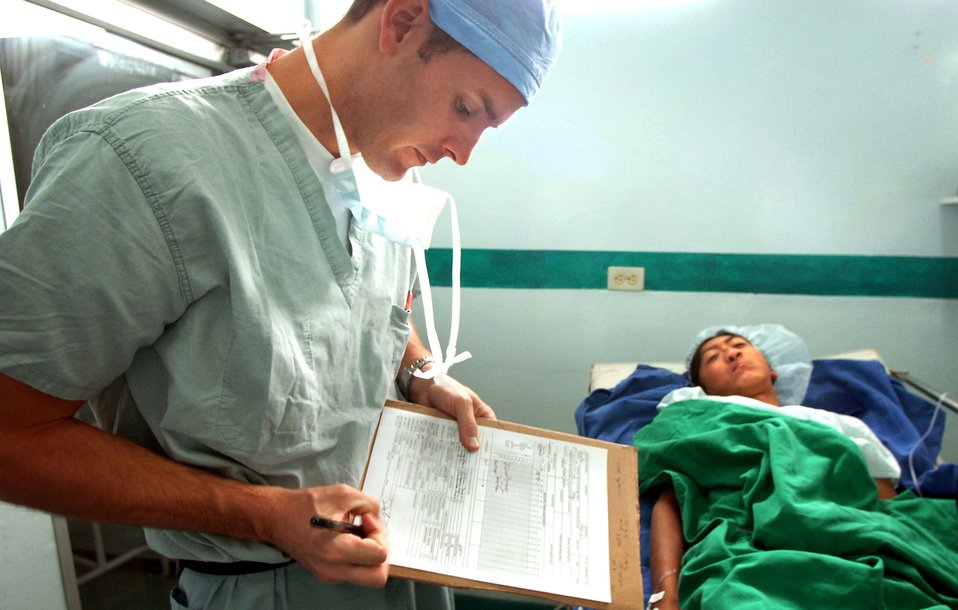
Air Force medics conduct plastic surgery clinic

CUENCA, Ecuador -- Capt. (Dr.) Dale Capener monitors the recovery of 14-year-old Adrian Pauta, checking for signs of side effects after the boy had cleft lip surgery. A seven-person plastic surgery team from Wilford Hall Medical Center at Lackland Air Force Base, Texas, is providing free corrective surgeries to Ecuadorian civilians as part of a 12-day medical readiness training exercise.